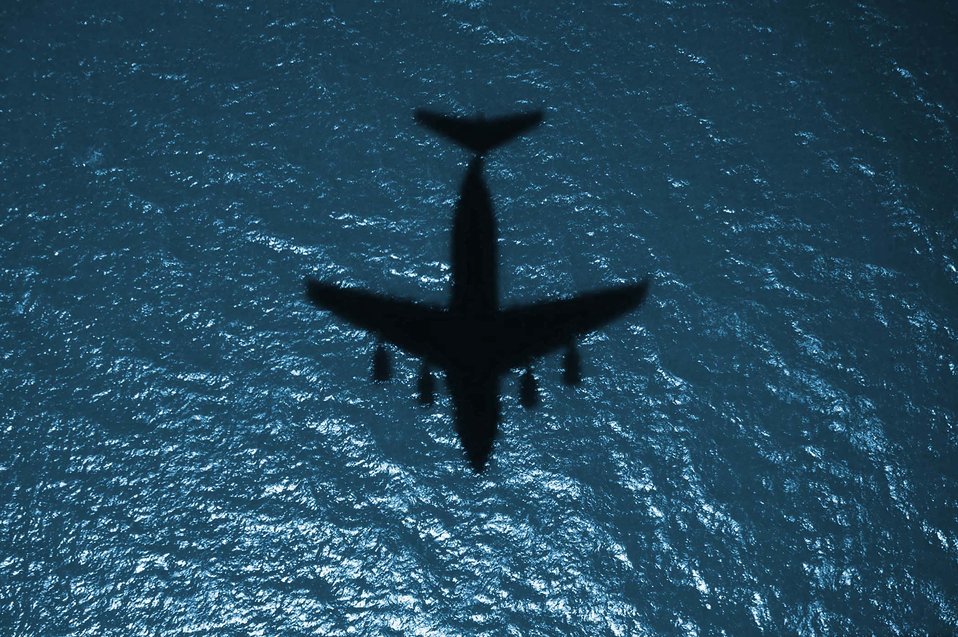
Let's fly

Airmen from the 14th Airlift Squadron fly over South Carolina's beaches July 4, 2010, from Joint Base Charleston, S.C.